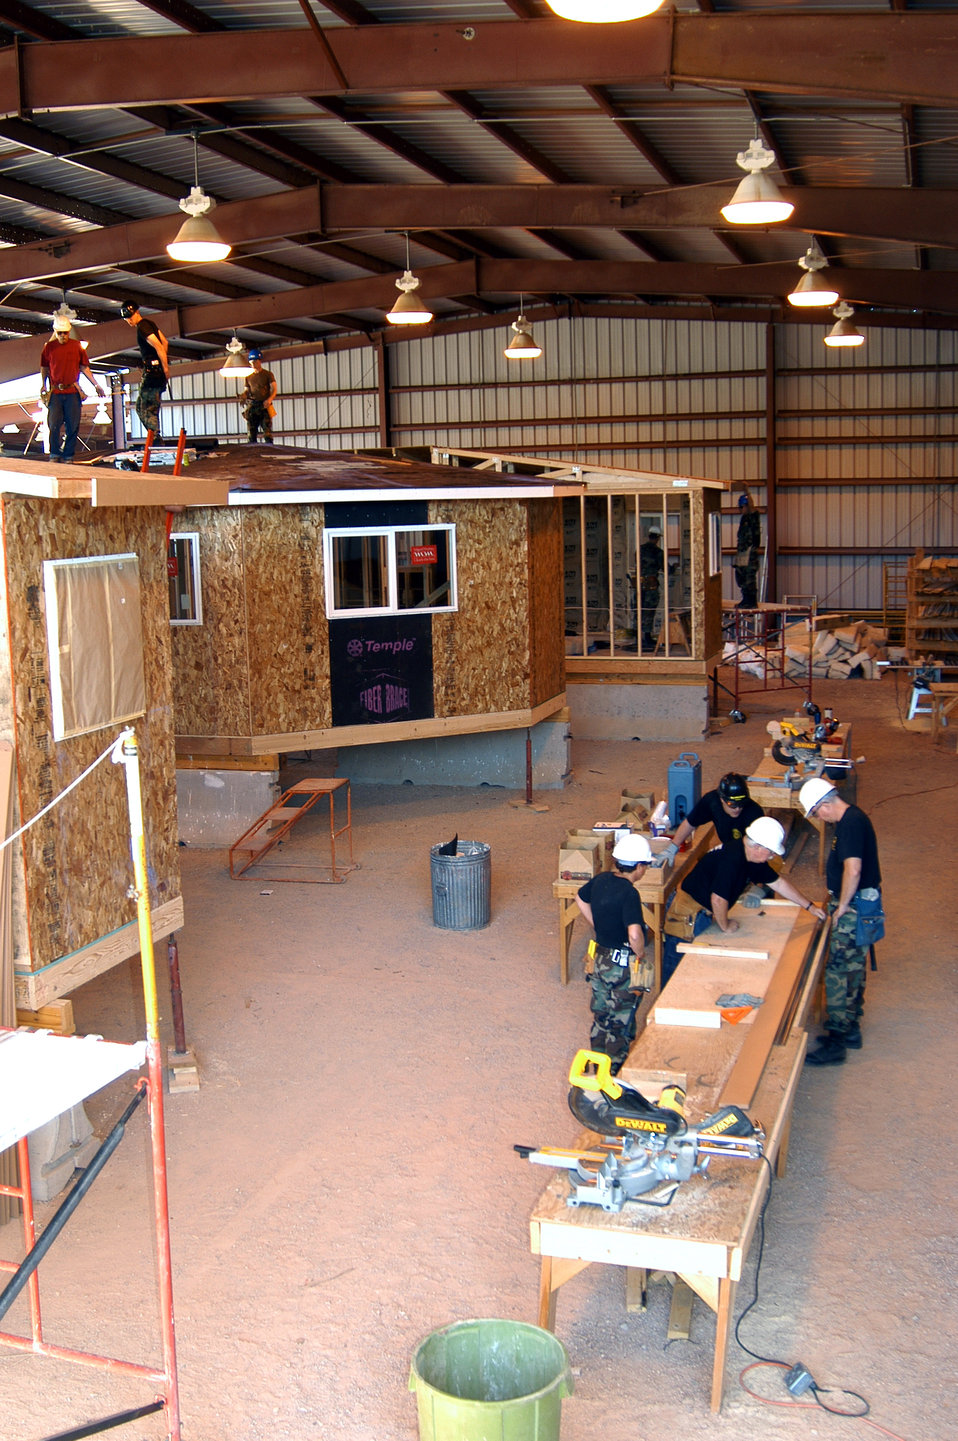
Workshop

U.S. AIR FORCE ACADEMY, Colo. -- Two traditional Navajo hogans are being constructed here by 79 cadets taking a field civil-engineering course designed to bridge the gap between academic theory and hands-on practice. The course is managed by a cadre of 19 senior cadets and 35 mentors. Each mentor is an experienced Air Force civil engineer from active-duty, Guard and Reserve units. The traditional eight-sided structures will be delivered to the Navajo nation in Gallup, N.M., in October.